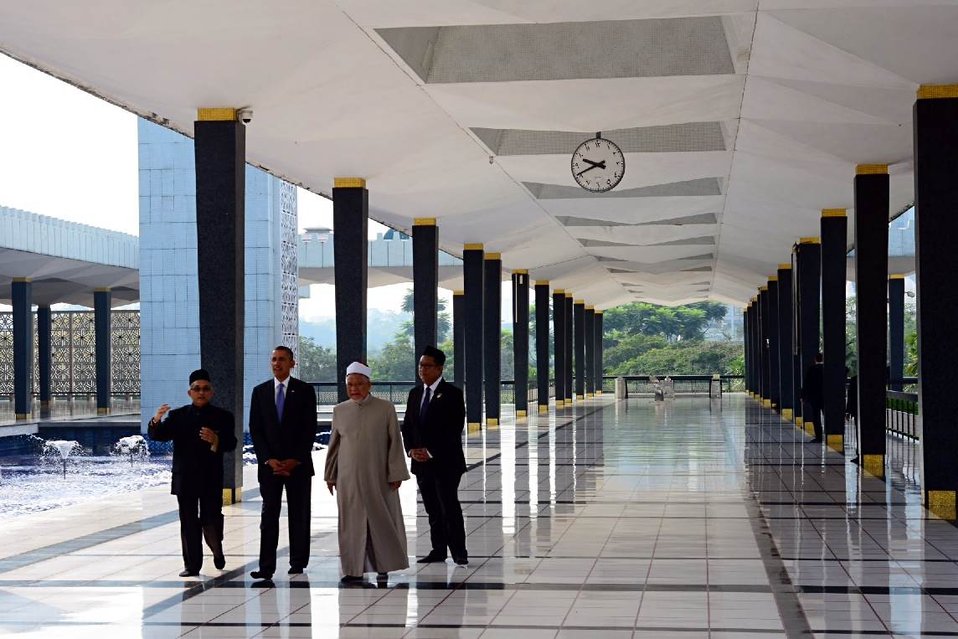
President Obama Visits the National Mosque of Malaysia

President Barack Obama visits the National Mosque of Malaysia in Kuala Lumpur, Malaysia on April 27, 2014.